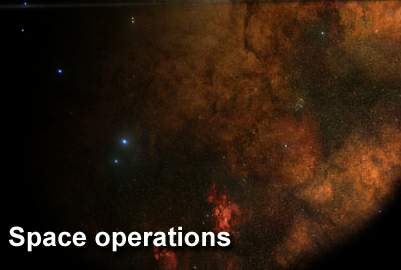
Space operations vital to Air Force, nation

Air Force officials discussed the importance of space as a warfighting domain before members of the Senate May 20 on Capitol Hill.